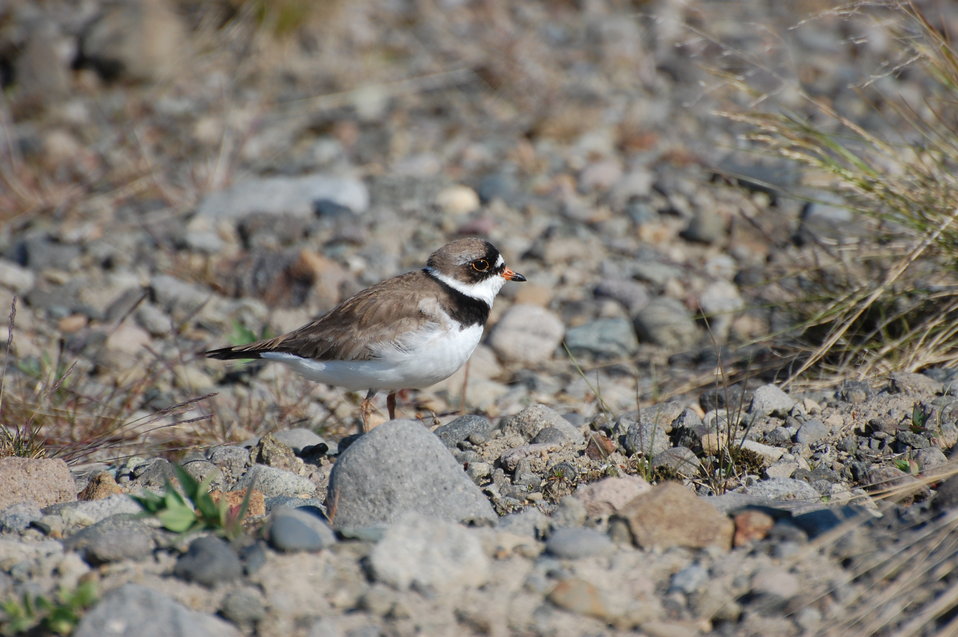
Semipalmated Plover

Izembek National Wildlife Refuge
Photo by Kristine Sowl,
USFWS, Public Domain